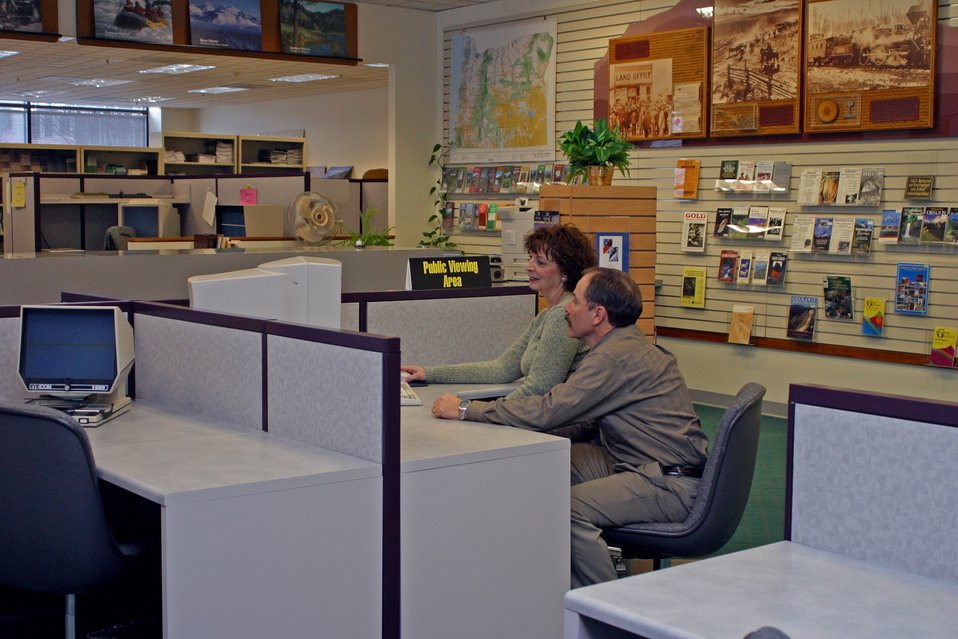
BLM's Land Office provides information about land status, minerals, maps, and general information to the public.